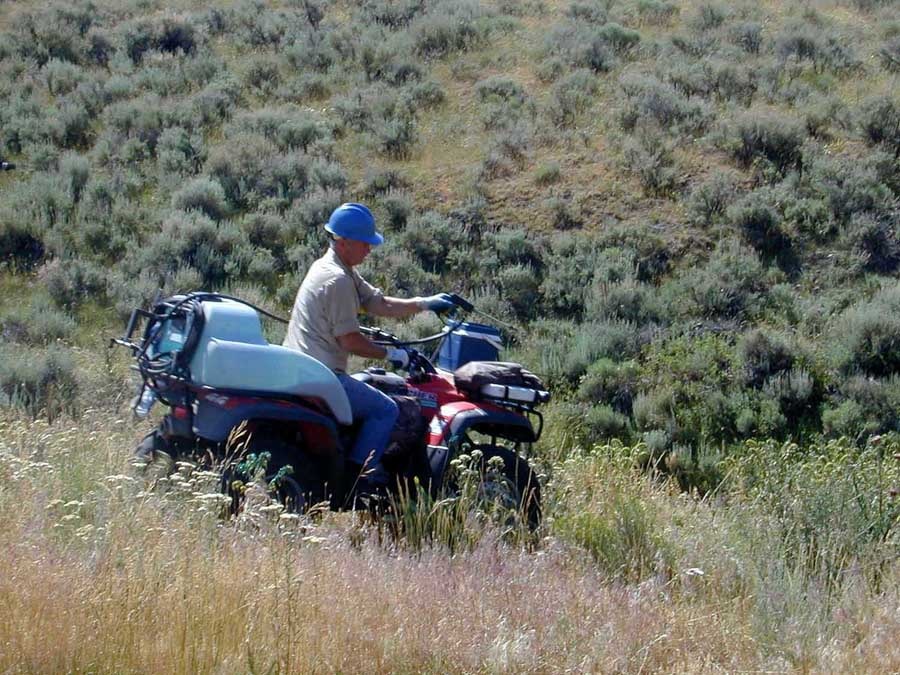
Roger Rosentreter displaying Diffuse Knapweed Idaho vegetation Plants in BLM